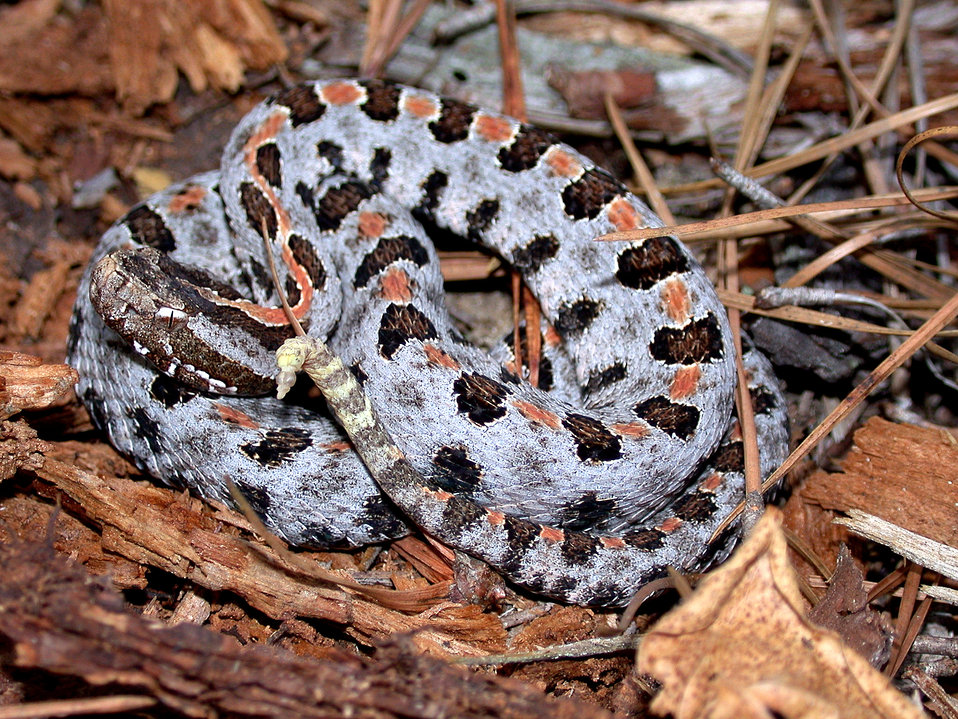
This is a 'Carolina pygmy' rattlesnake, Sistrurus miliaris miliaris, the most distinctly patterned, and variably colored subspecie of the pygmy rattlesnake group, ranging from eastern North Carolina, southwestward through most of South Carolina, across central Georgia and Alabama, and into a small portion of east central Mississippi (Connant, 1975), placing it in hurricane-prone areas, which is of importance to those living in these regions, and first-responders offering aid to those affected by such a disaster. It inhabits the long needle pine-scrub oak, and pine flatwood areas along the Atlantic Coastal plain, and the pine-oak forests in the western aspect of its range (Connant, 1975). Its ground color is highly variable, and typically matches the dominant soil color in the locality from which they originated. Individuals originating from central North Carolina, certain areas in South Carolina and eastern Georgia often have an overall red or pinkish-orange ground color.